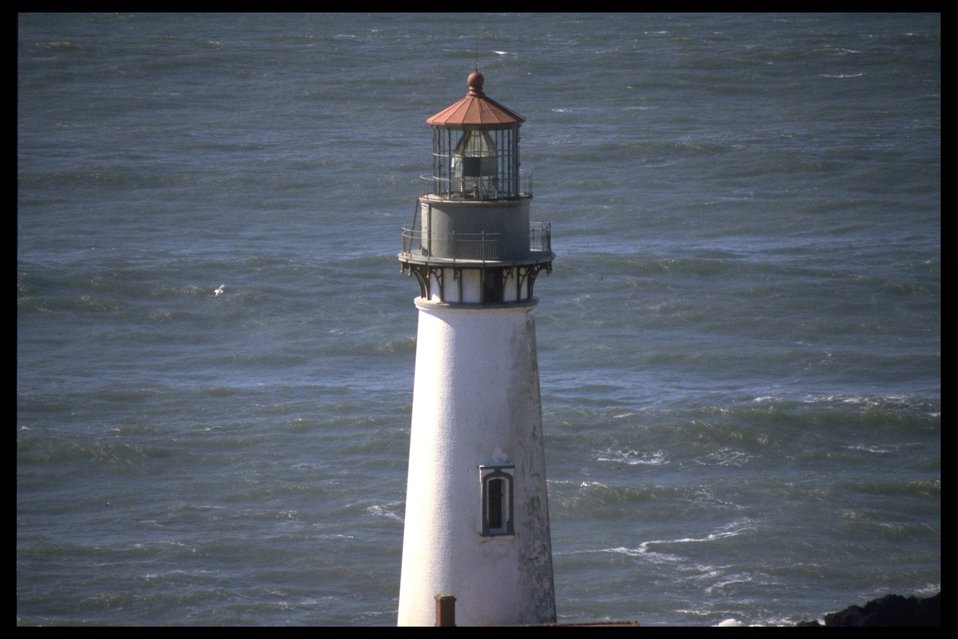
Yaquina Head Lighthouse.